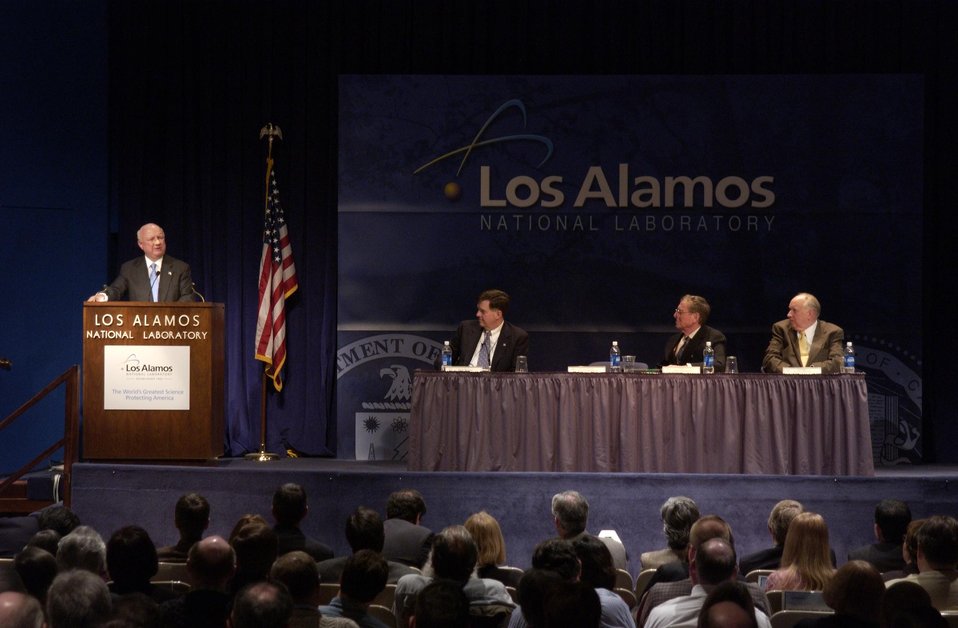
SECRETARY OF ENERGY SAMUEL BODMAN ADDRESSES THE WORK FORCE AT LOS ALAMOS NATIONAL LABORATORY.

ON THE STAGE WITH THE SECRETARY ARE LANL DIRECTOR PETE MANOS, NEW MEXICO SENATOR PETE DOMENICI AND LINTON BROOKS, ADMINISTRATOR OF THE NATIONAL NUCLEAR SECURITY ADMINISTRATION. ON FEBRUARY 25, 2005 THE SECRETARY ALSO TOURED THE LABORATORY, RECEIVED BRIEFINGS ON LAB PROGRAMS AND VISITED VARIOUS FACILITIES.